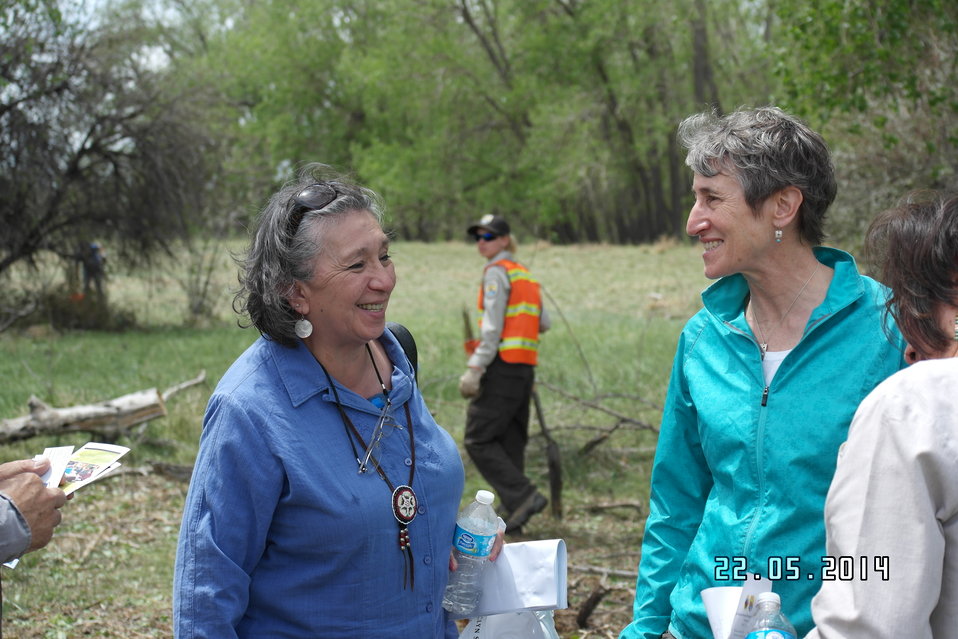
Native American Fish and Wildlife Society Meet with Interior Secretary Sally Jewell

Interior Secretary Sally Jewell helps local youth conservation groups plant cottonwood trees at Rocky Mountain Arsenal National Wildlife Refuge.